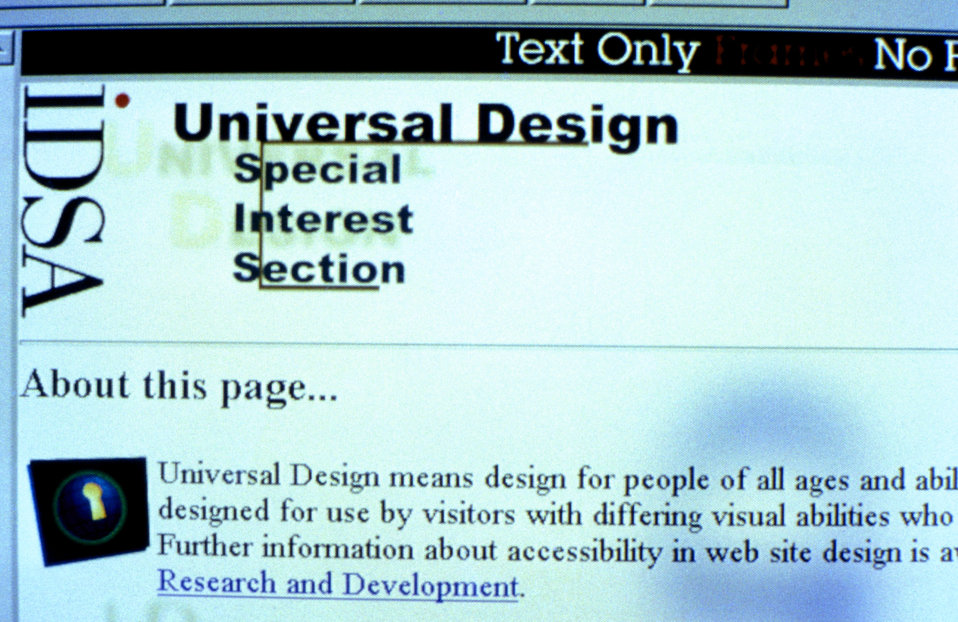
This 1996 image depicted a portion of a web site with a 'Text Only'